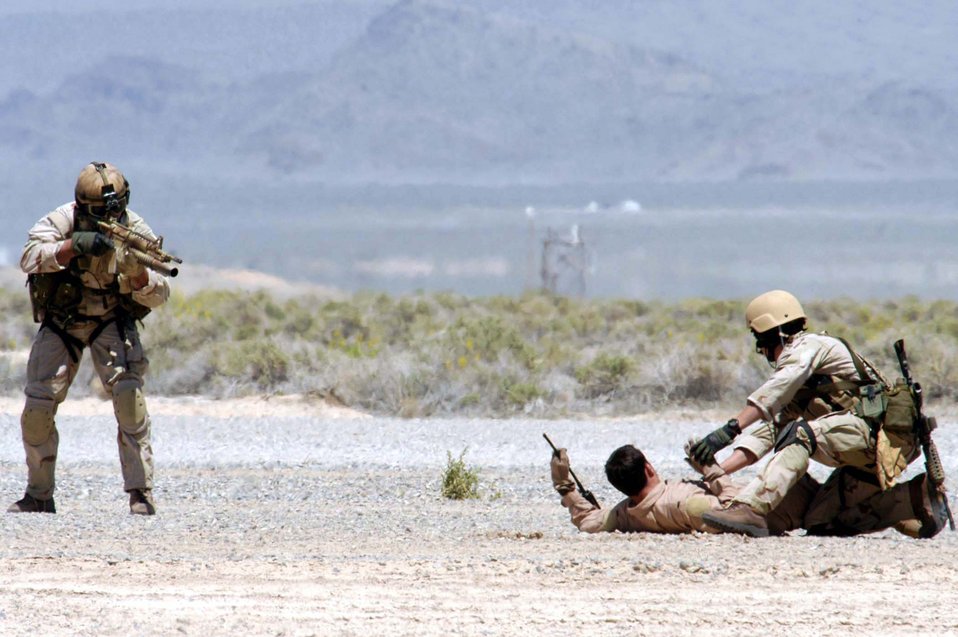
Firepower demo

NELLIS AIR FORCE BASE, Nev. -- Pararescuemen from the 66th Rescue Squadron move in to rescue a